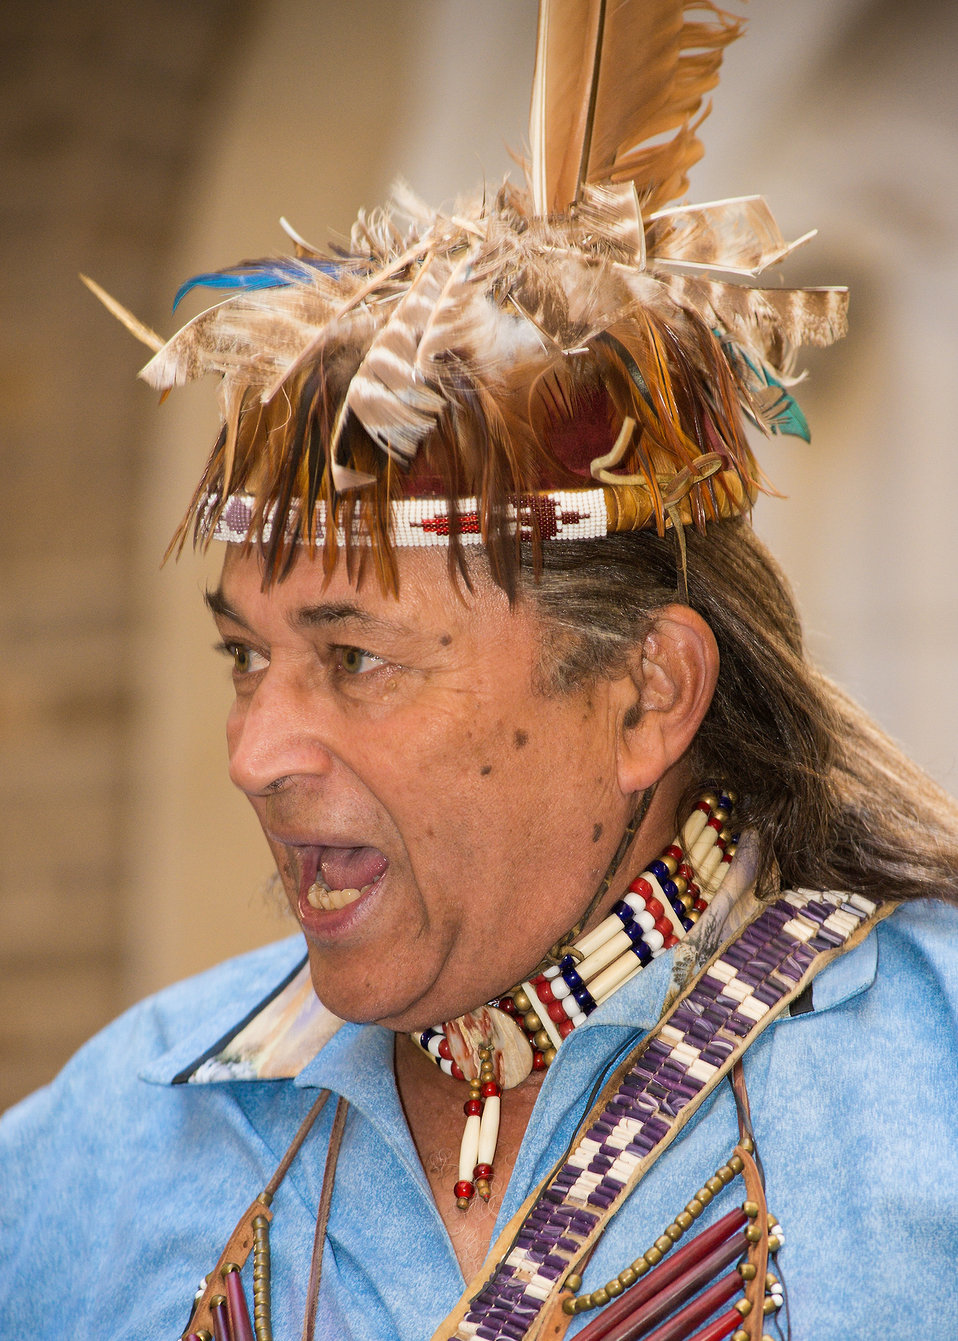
Cheroenhaka Nottoway Indian Tribe Chief Walter D. “Red Hawk” Brown III presents a history of the First American Tribes of Virginia at the 2013 American Indian and Alaska Native Heritage Observance at the U.S. Department of Agriculture (USDA), on Thursday, Nov. 14, 2013 in Washington, D.C. The theme of this year’s event was “Guiding Our Destiny with Heritage and Traditions.”